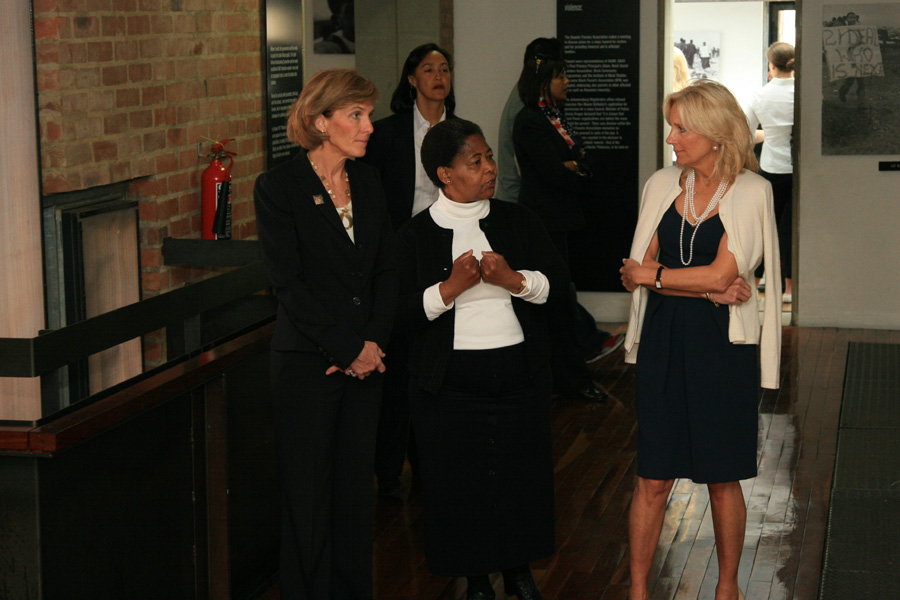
Dr. Jill Biden and Liz Berry Gips Visit Hector Pieterson Museum

Dr. Jill Biden, wife of Vice President Joseph Biden, and Liz Berry Gips, wife of U.S. Ambassador to South Africa Donald H. Gips, visit the Hector Pieterson Museum in Soweto, South Africa, on June 12, 2010.